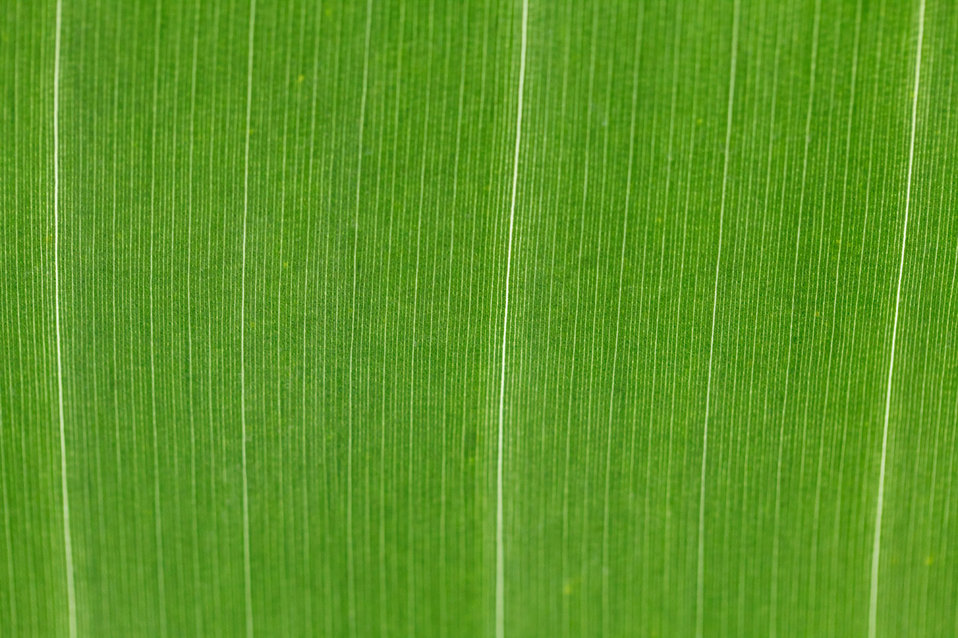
Green leaf pattern

Macro photo of a green leaf.